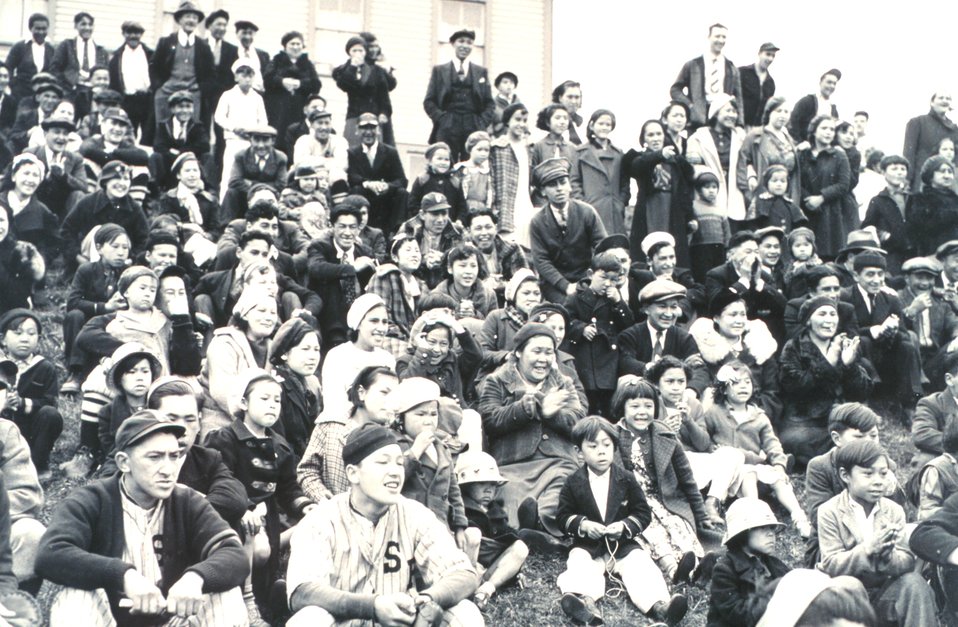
Part of the crowd celebrating the 4th of July at St. Paul. A number of representatives of the local baseball team are dressed for a game. F&WS 10,020.